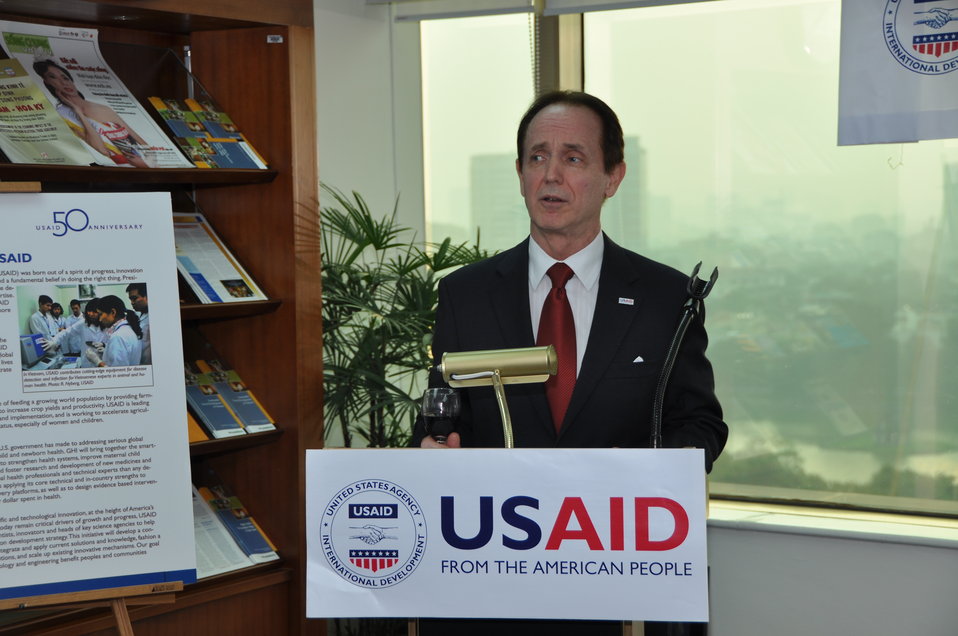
USAID Vietnam Open House, November 3, 2011